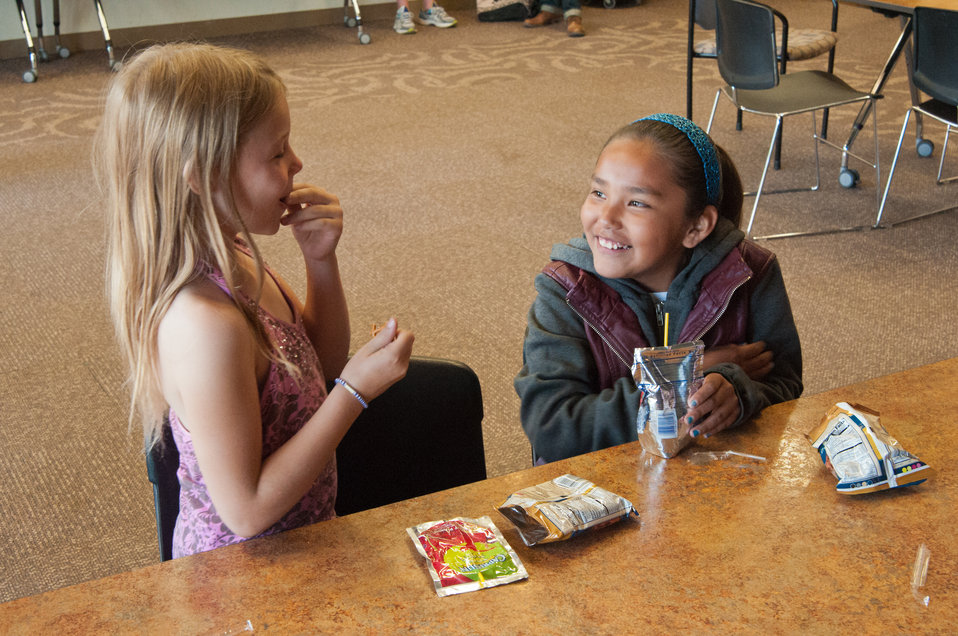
Deandra Shideler and Sarafina Chackee enjoy a snack at the Boys and Girls Club of the Southern Ute Indian Tribe in Ignacio, CO on Thursday, Jun. 13, 2013. The U.S. Department of Agriculture’s (USDA) Food and Nutrition Service (FNS) assists the club with healthy snacks while the children are participating in programs at the Southern Ute Community Center.